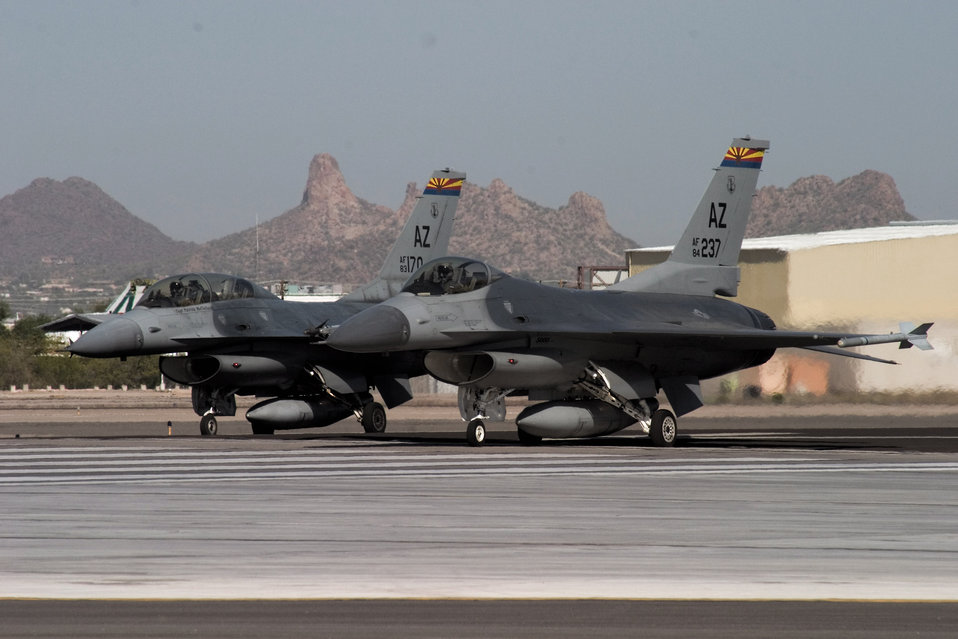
Building capable allies, strong bonds

From the end of the runway at Tucson International Airport, an F-16 Fighting Falcon instructor pilot with the Arizona Air National Guard's 162nd Fighter Wing prepares to take off with his wingman, an international student pilot training with the Guard unit.